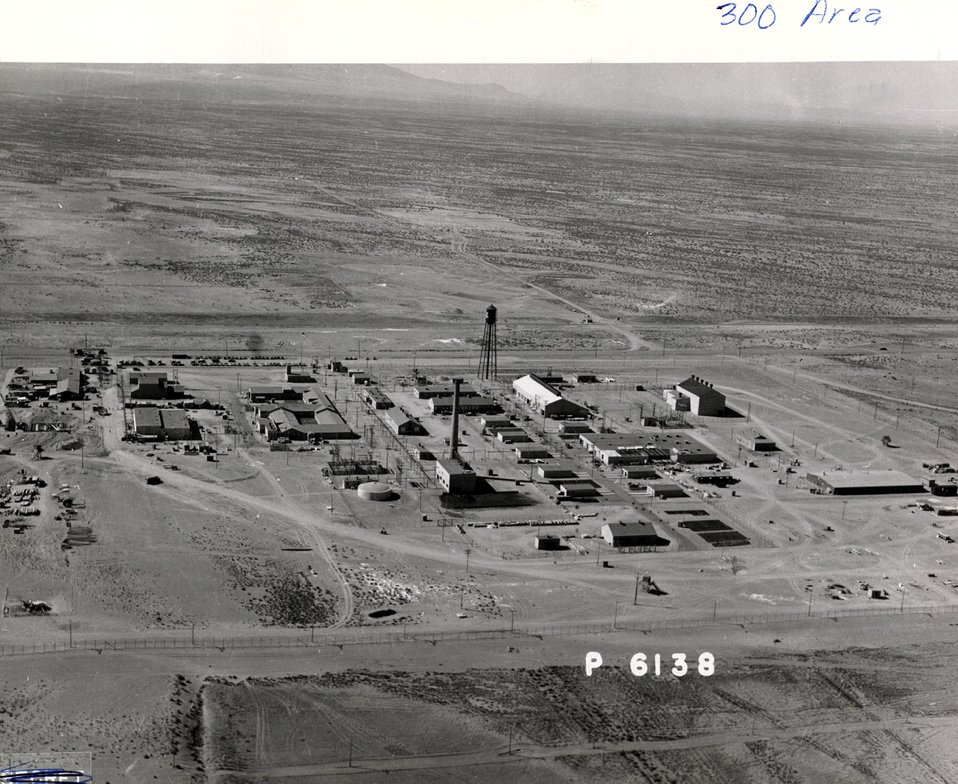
Aerial view of 300 Area. Circa 1944.